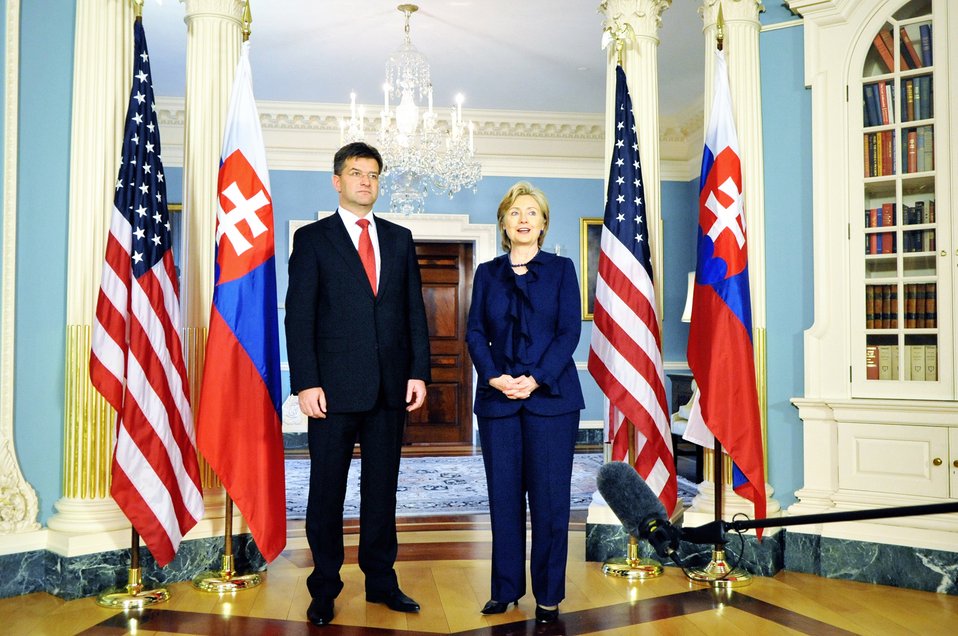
Secretary Clinton Meets With Slovak Foreign Minister

U.S. Secretary of State Hillary Rodham Clinton hosts a bilateral meeting with Slovak Foreign Minister Miroslav Lajcak in the Treaty Room of the U.S. Department of State in Washington, DC May 7, 2009.